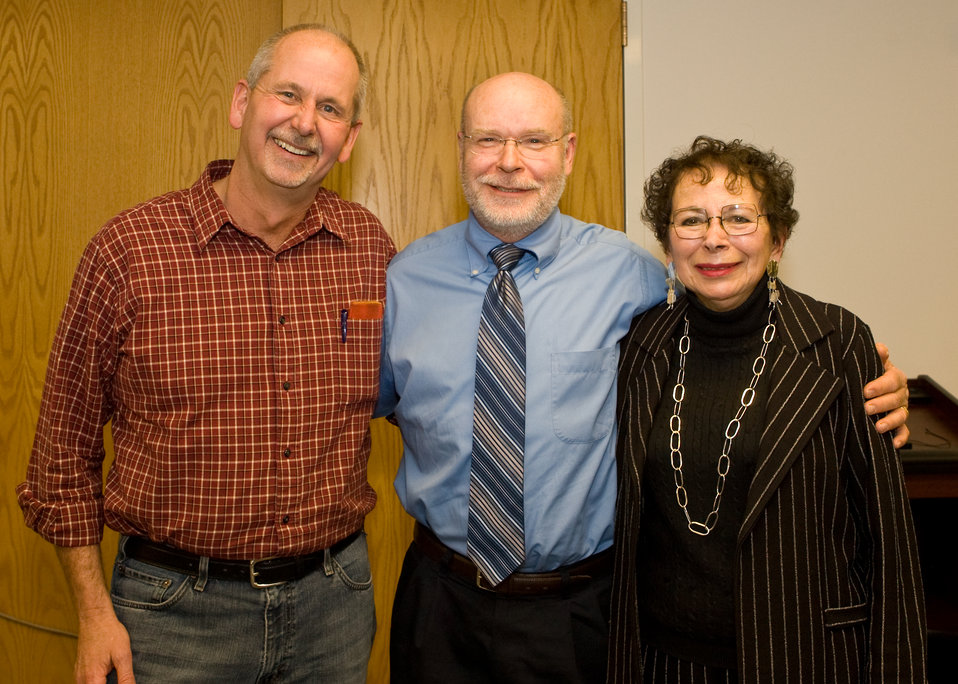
(from left) Ed Bangs, Steve Fritts, Margot Zallen

On May 23rd, 2011 The U.S. Fish and Wildlife Service Mountain-Prairie Region honored three of the most influential individuals in wolf recovery in the Northern Rocky Mountains: Ed Bangs, Steve Fritts, and Margot Zallen. Ed Bangs started the event with an hour-long presentation, “Wolf Conservation: The Good, The Bad, and The Ugly.”

Following the presentation, Regional and National leadership recognized the imminent retirement of Ed, Steve, and Margot with a variety awards for their contributions.